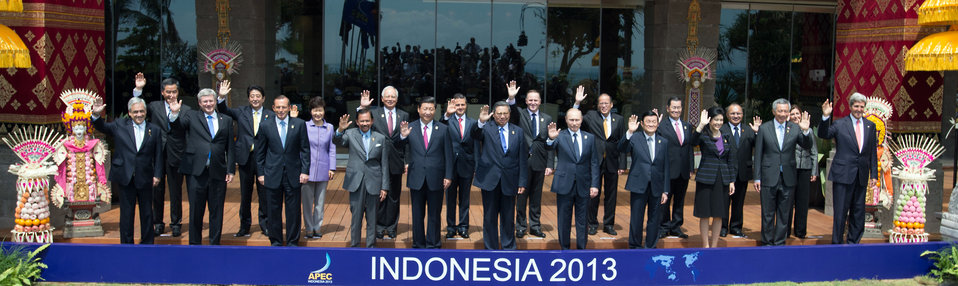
Secretary Kerry Poses for a APEC Family Photo

U.S. Secretary of State John Kerry poses with APEC Leaders for a family photo in Bali, Indonesia, on October 8, 2013.